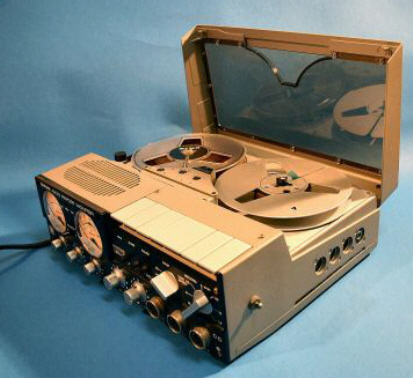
Deutsch: Uher Report Tonbandgerät